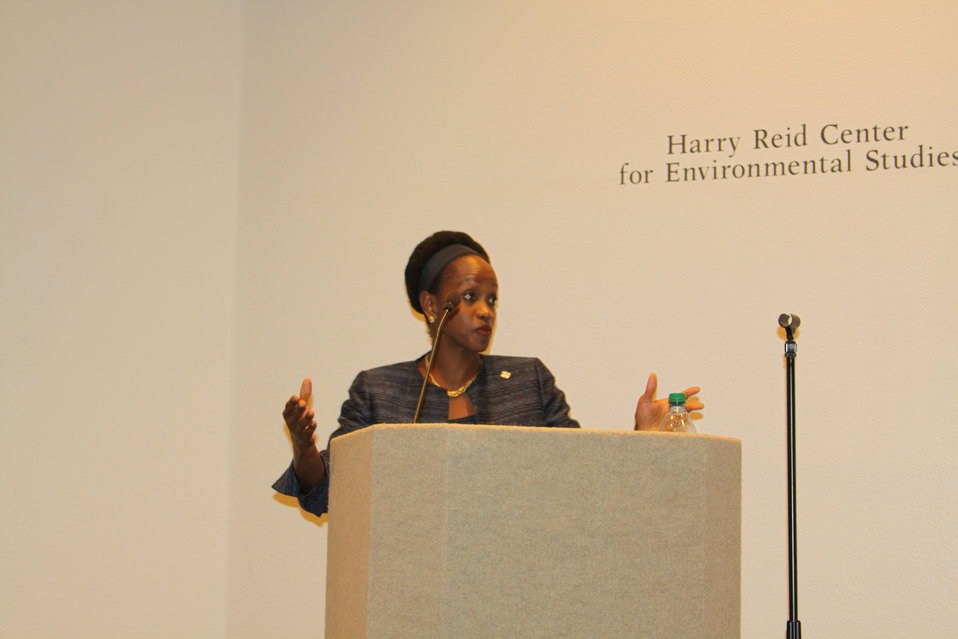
Assistant Secretary Brimmer Delivers Remarks to Students

Assistant Secretary for International Organization Affairs Esther Brimmer delivers remarks to international relations and political science students at the University of Nevada in Las Vegas on September 1, 2011.